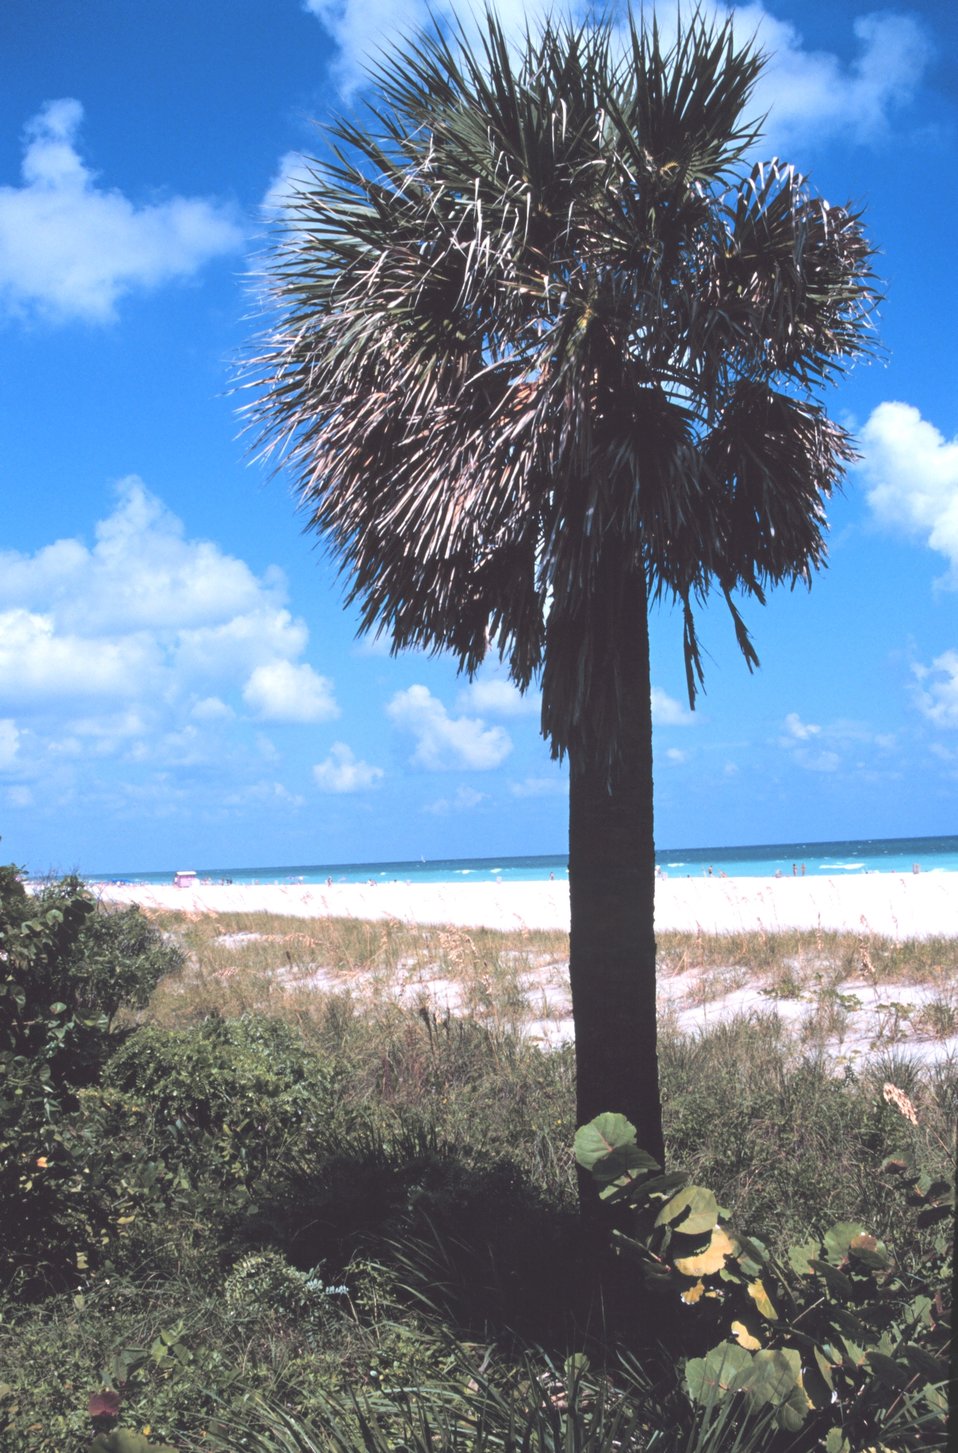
A view of the beach along the Atlantic Ocean